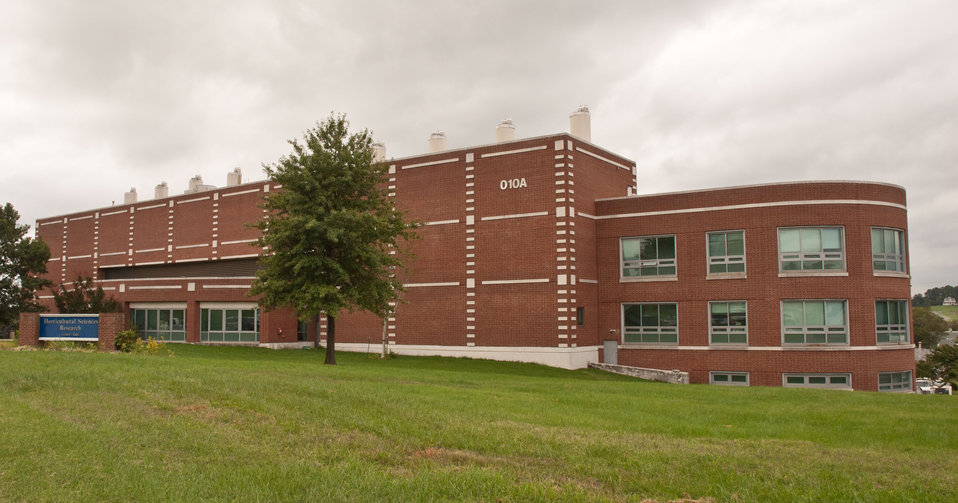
United States Department of Agriculture (USDA), Henry A. Wallace Beltsville Agricultural Research Center (010A) is home to several science institutes, in Beltsville, MD, on Wednesday, September 21, 2011.